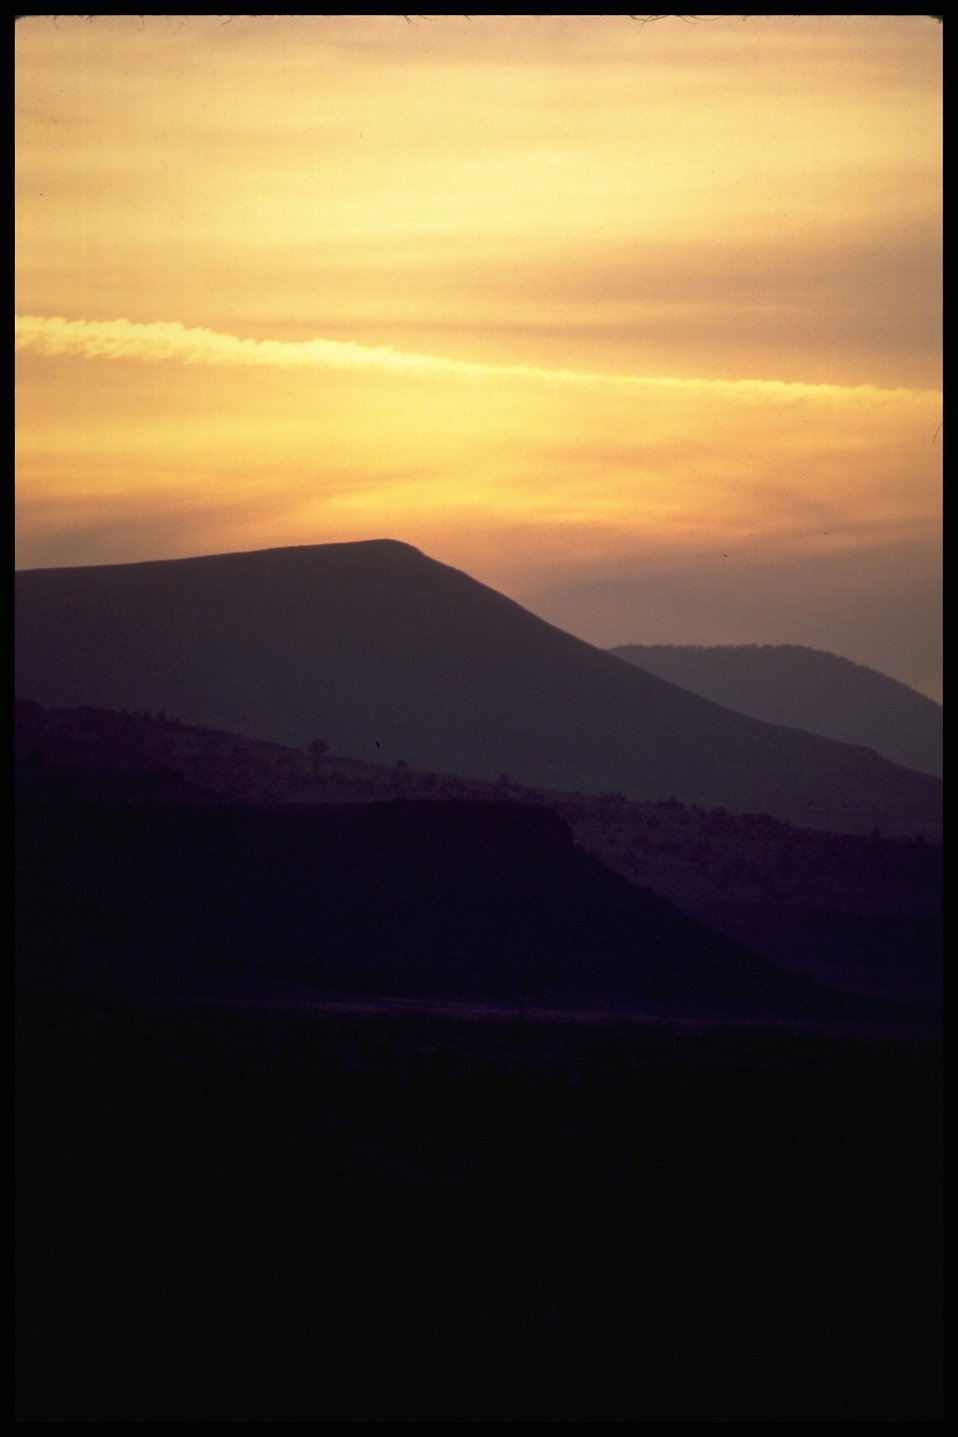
Lakeview District. Sunset.